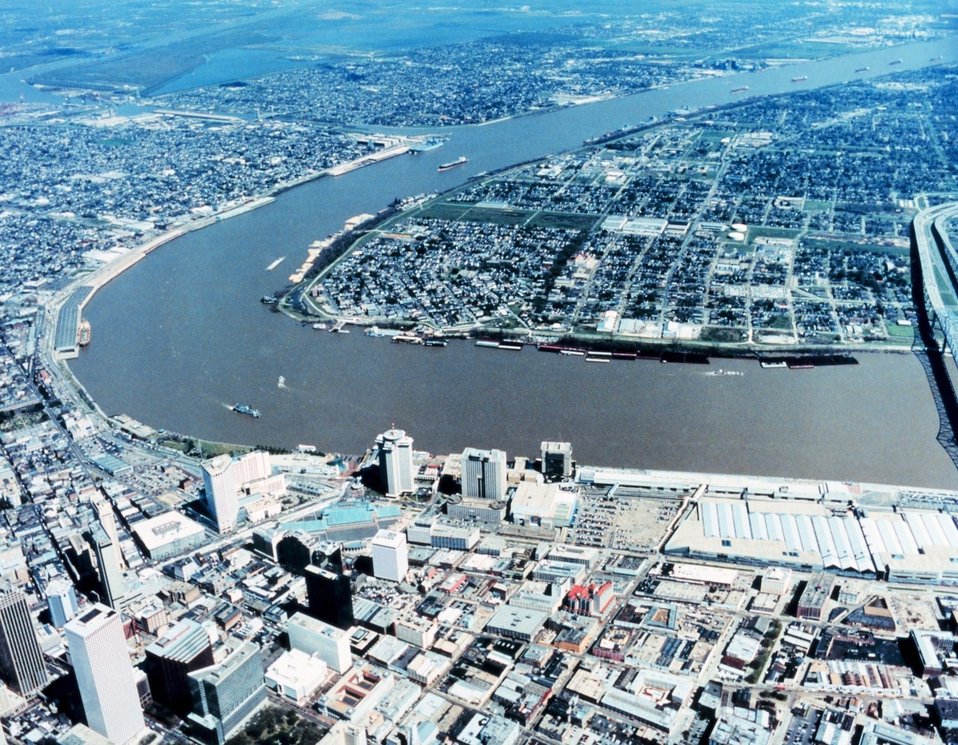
2957 North Latitude 9005 West Longitude.